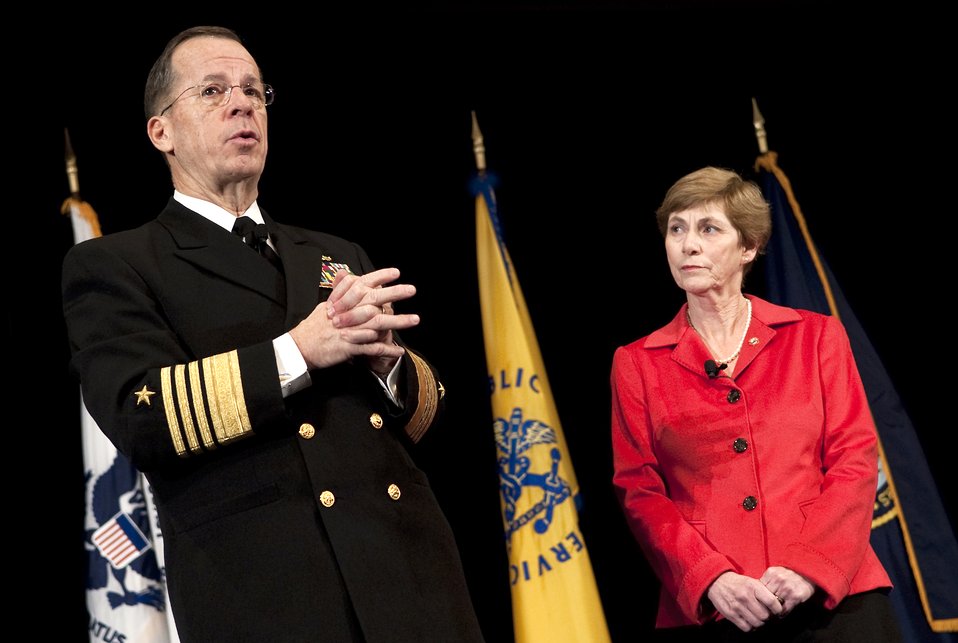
Suicide prevention conference

Adm. Mike Mullen, chairman of the Joint Chiefs of Staff, and his wife, Deborah, address the audience Jan. 13, 2010, at the 2nd Annual Suicide Prevention Conference sponsored by the Defense and Veterans Affairs departments in Washington, D.C.